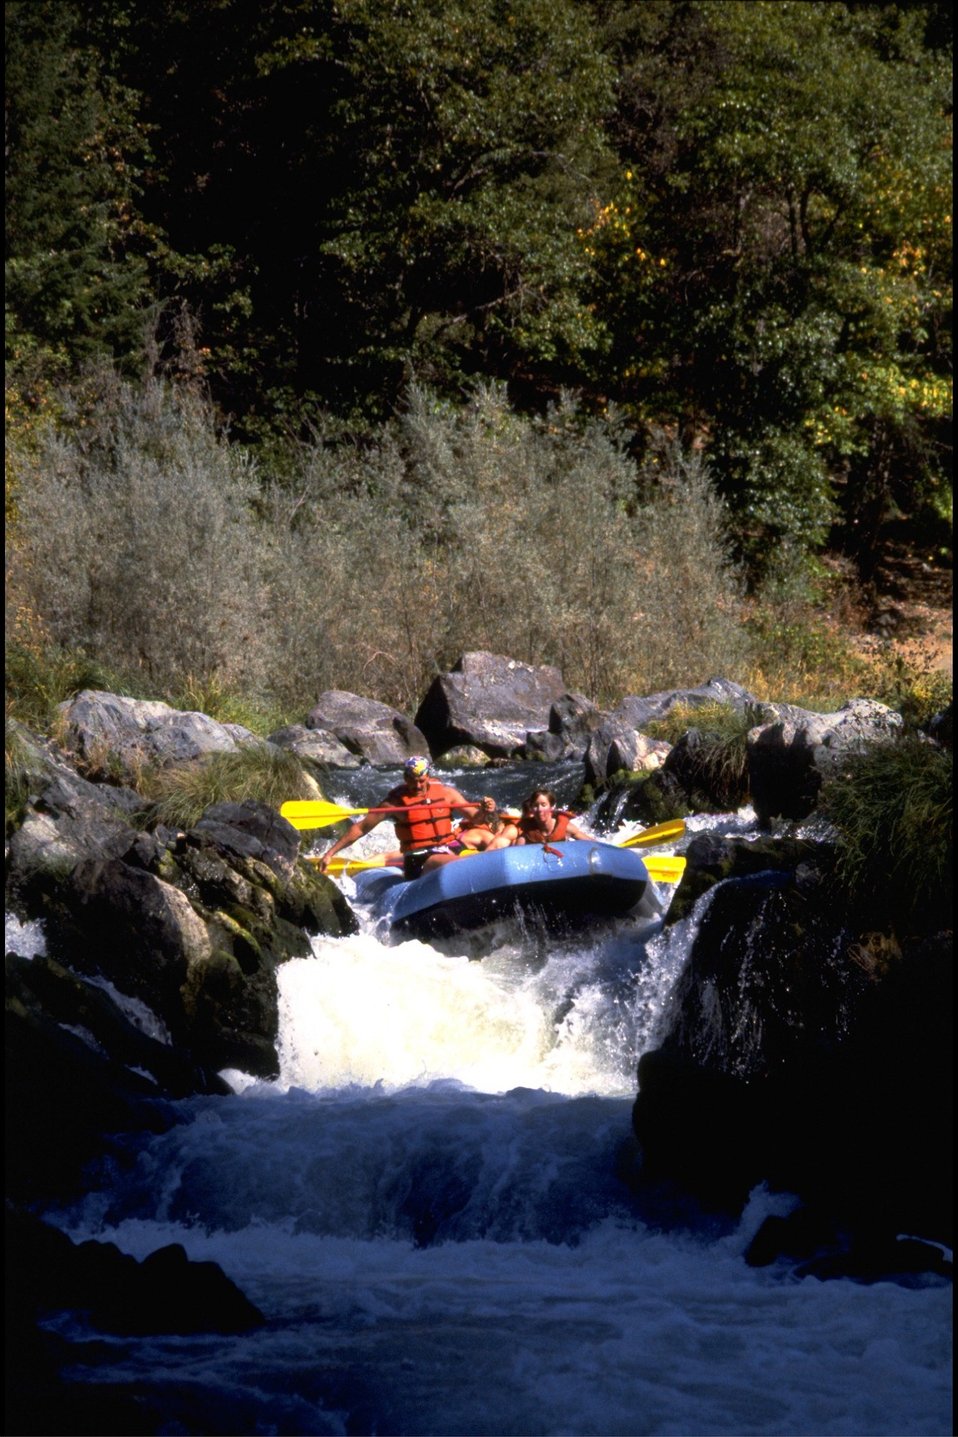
Rogue River - Rainie Falls, wild section. Paddle raft in middle chute, 950 cfs.